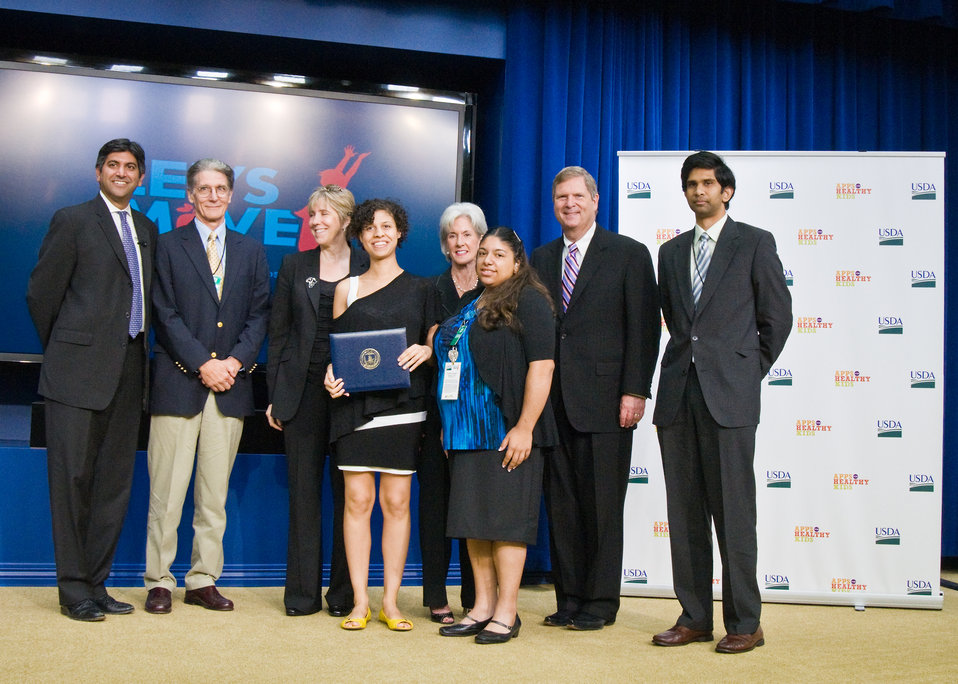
Aneesh Chopra, White House Chief Technology Officer, Health and Human Services Secretary Kathleen Sebelius and Agriculture Secretary Tom Vilsack present the Corporate Recognition Award to Ian Holtrum, Denver, Colorado and the developers of the app 'Hungry Hiker Build-A-Meal,' of The Apps for Healthy Kids competition at the White House, in Washington, DC, on Wednesday, September 29, 2010. The Apps for Healthy Kids competition is part of First Lady Michelle Obama’s Let’s Move campaign to end childhood obesity within a generation. The competition challenges software developers, game designers, students and other innovators to develop fun and engaging software tools and games to urge children, especially “tweens” (children ages 9-12) – directly or through their parents – to eat better and be more physically active. 'Hungry Hiker Build-A-Meal,' is an interactive tool ties physical activity with good eating habits in a fun and engaging way, as you build a balanced meal to fuel a hiker to the summit. USDA Photo 10di1506-137by Bob Nichols.